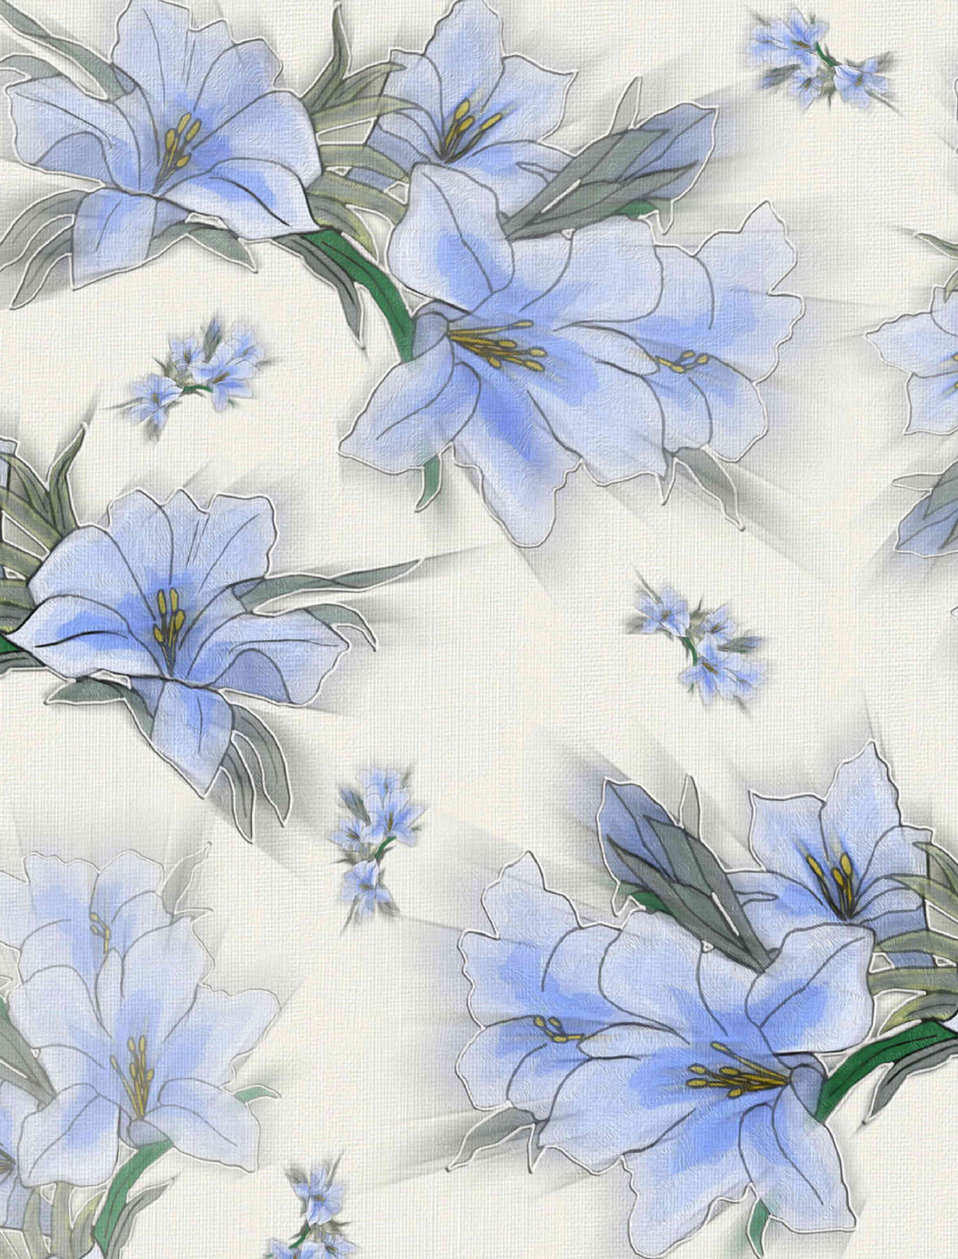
Blue flowers

It is a white background with blue flowers, this image is big enough to print out and use a stationary..